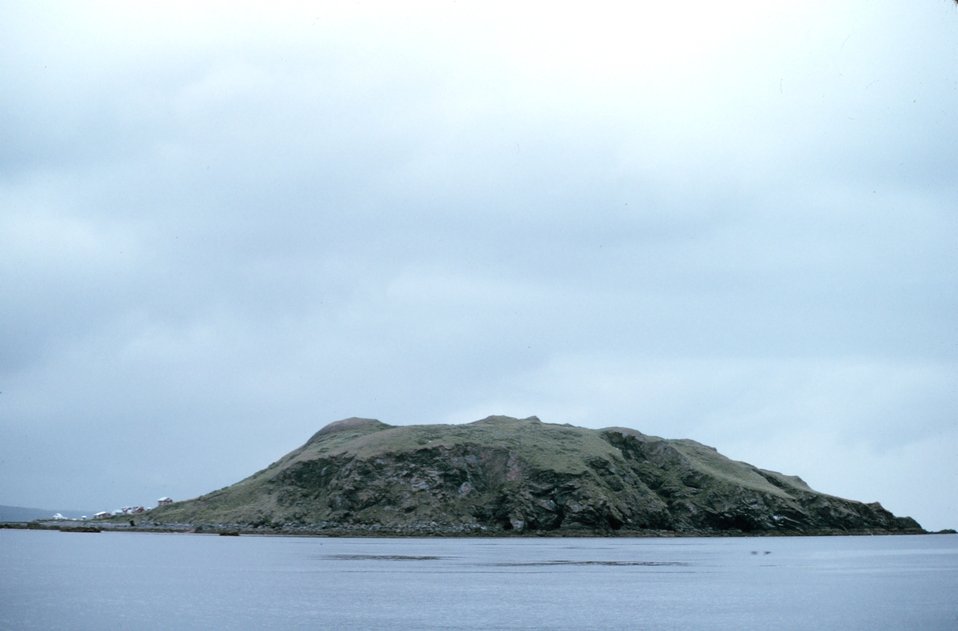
The village of Larsen Bay on Uyak Bay.